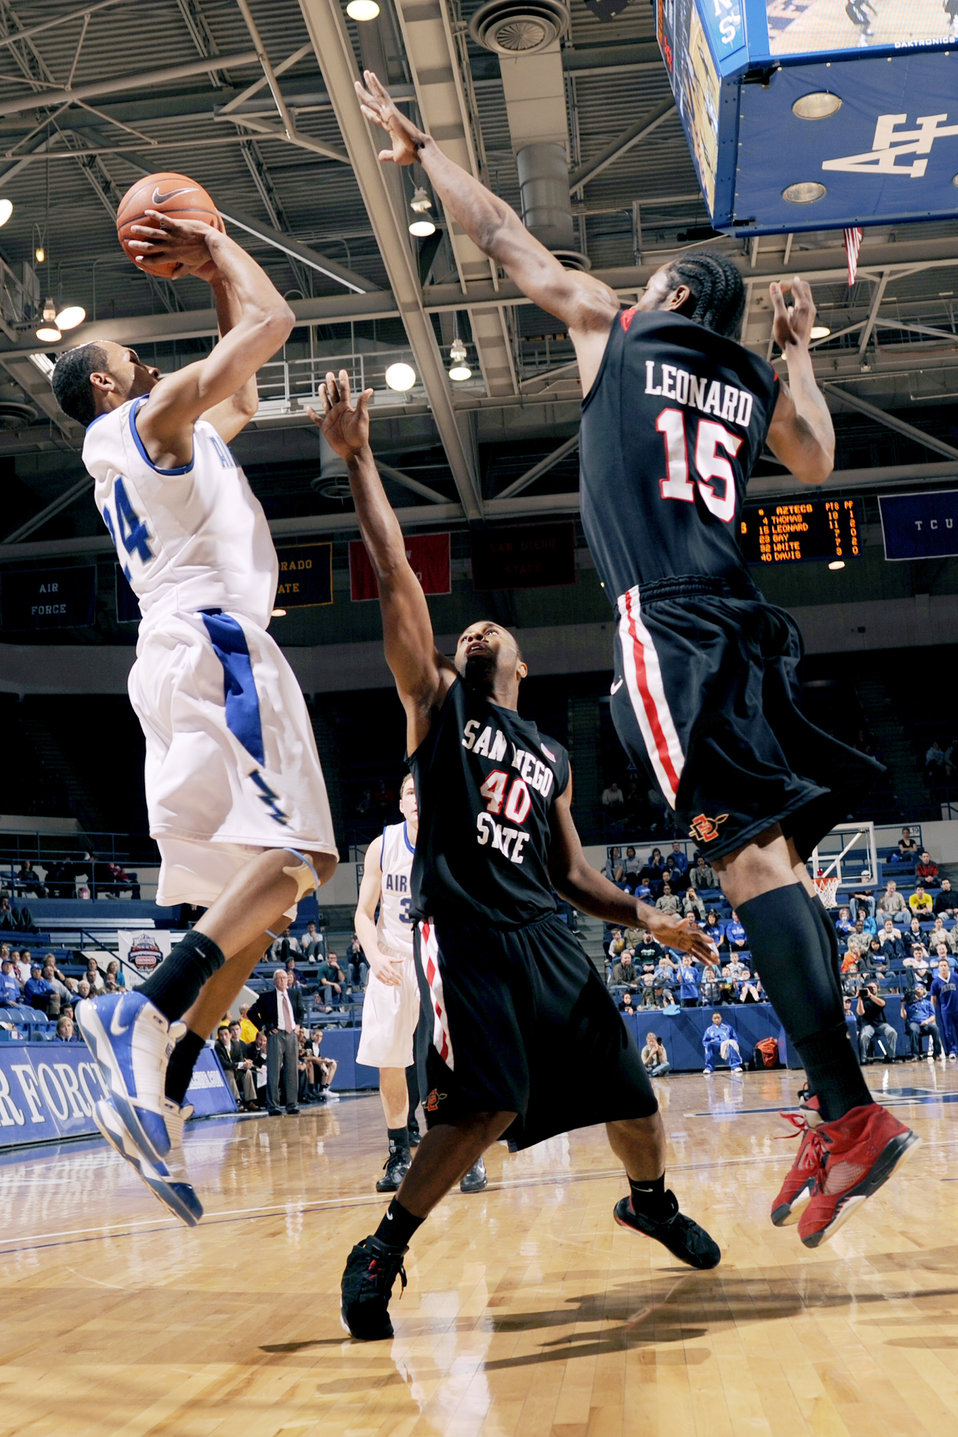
Air Force basketball falls to San Diego, 61-42.

Derek Brooks, a junior forward for the Air Force Academy, goes up for a shot as San Diego's Kelvin Davis, a senior guard and Kawhi Leonard, a freshman forward, try to block during the game at the U.S. Air Force Academy's Clune Arena in Colorado March 6, 2010. Brooks added 8 points to the score board for the Falcons, but Air Force fell to San Diego 61-42.